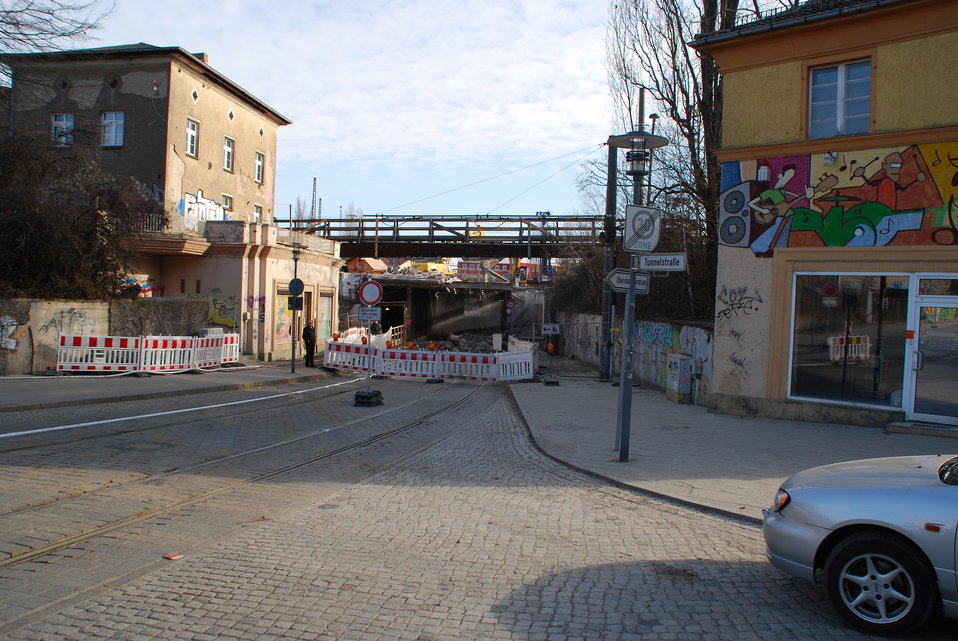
Abriss Bahnhofstunnel Frankfurt (Oder)